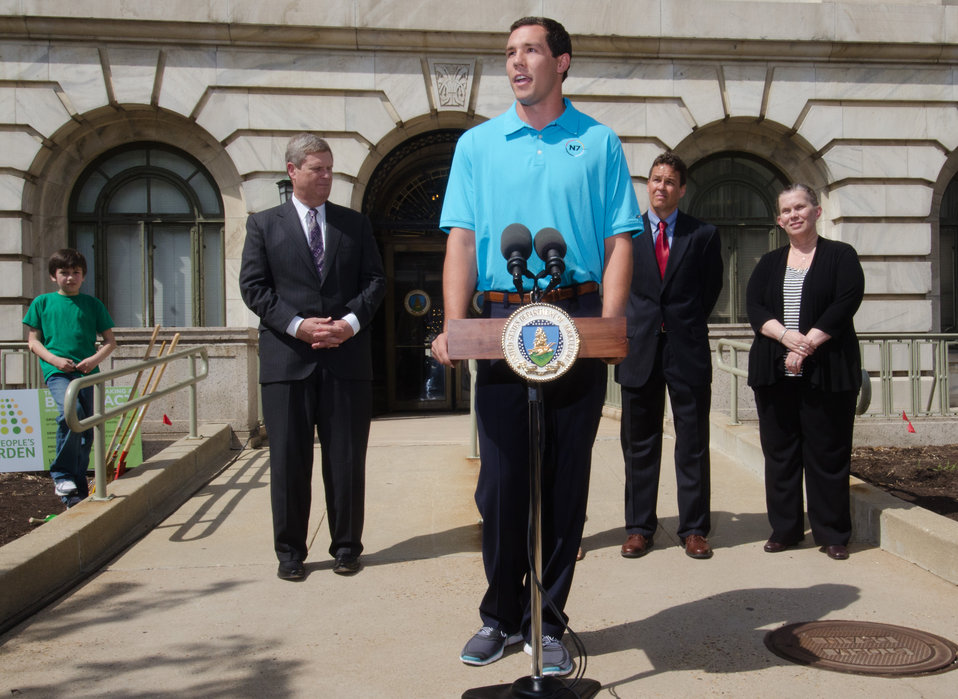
St. Louis Rams Quarterback Sam Bradford (at podium) and Agriculture Secretary Tom Vilsack (left) met at the U.S. Department of Agriculture in Washington, DC, on Wedneday, April 27, 2011, to encourage Native American Youth to pursue a healthy lifestyle. Bradford told of how his mother only let him watch one hour of TV before he had to go out and play after doing his homework. More than 30 Students from Eastern and Western Tribes, Southeast Alaska, and Tuba City, Arizona came to the Nation’s Capitol to plant vegetable seeds that are indigenous to North America. Bradford is a citizen of the Cherokee Nation. The garden is called The Roots of American Agriculture, and is part of the Headquarters’ People’s Garden. Also speaking at the event was the Executive Director of First Lady Michelle Obama’s Let’s Move! Campaign Robin Schepper (not shown); Director of the Bureau of Indian Education, and Janie Hipp (striped blouse), Senior Advisor to Secretary Vilsack with the USDA Office of Tribal Relations.